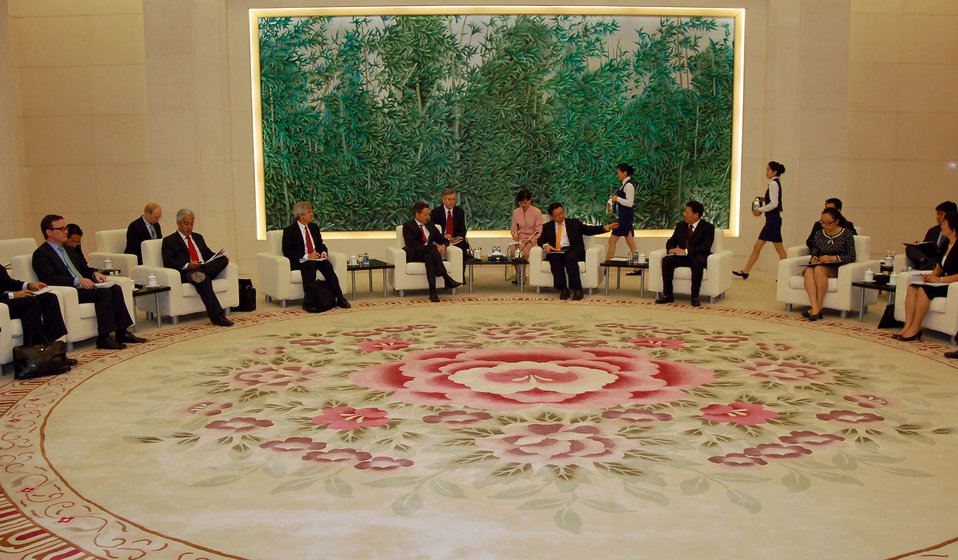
China trip: May 31-July 2 2009

The United States and Chinese delegations at the Ministry of Commerce meeting.